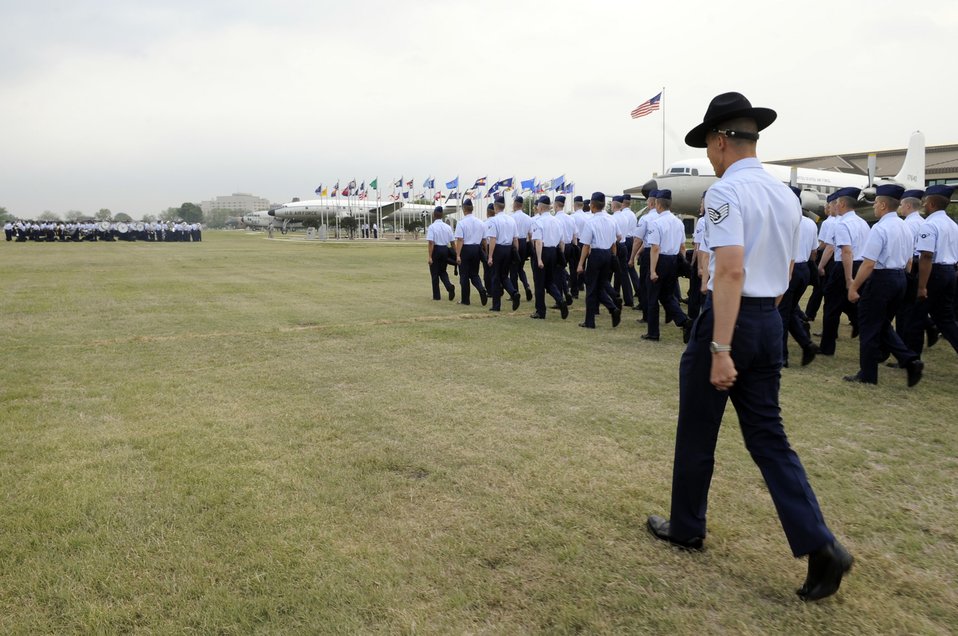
From basic trainee to Airman

A military training instructor marches his flight on the parade grounds at Lackland Air Force Base, Texas, April 24 for their graduation ceremony.